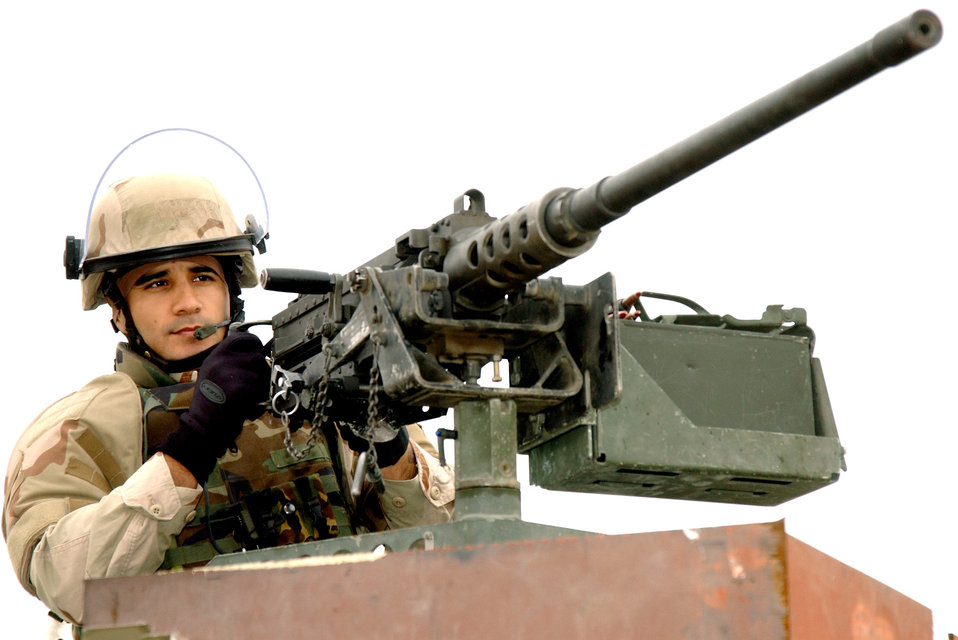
Tikrit Airmen focused on the job at hand

TIKRIT, Iraq -- Senior Airman Ronnie Rodriguez stands ready at a 50 caliber machine gun before a convoy security mission in Iraq. He is assigned to Detachment 1058 of the 732nd Expeditionary Logistics Readiness Squadron.